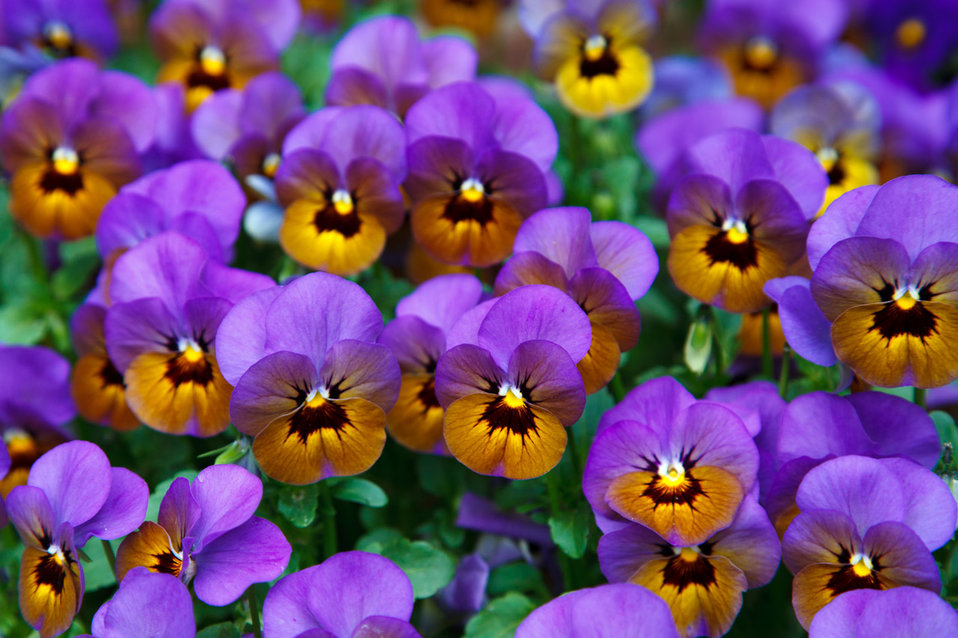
Purple pansies

Purple yellow pansies background.